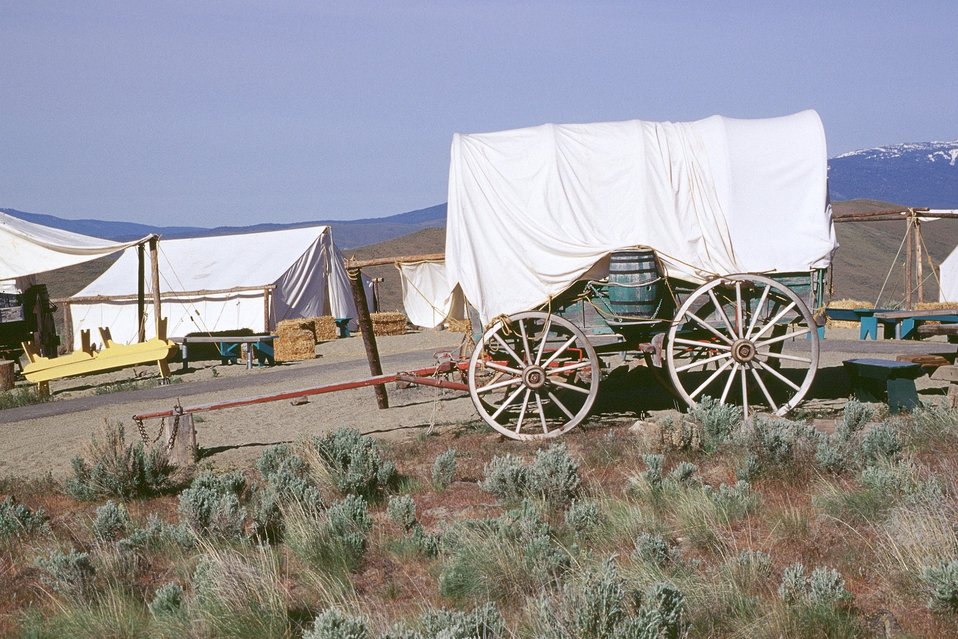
Encampment from wagon train reenactment. NHOTIC 10th Anniversary